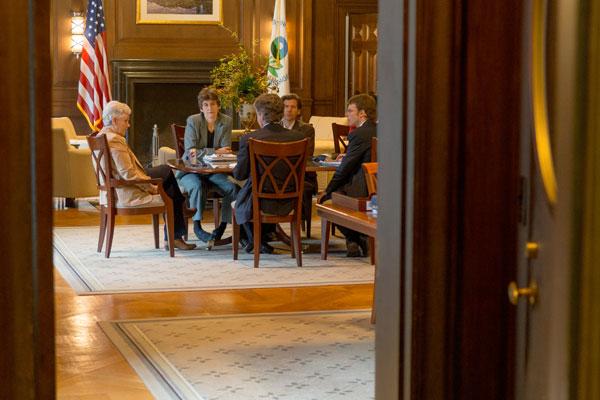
Day in the Life - April 4, 2014

12:39 pm - As part of an ongoing effort to make progress in every American community, McCarthy meets with agency officials to discuss mitigation and resilience efforts for cities and states to deal with a changing climate. (7/12)